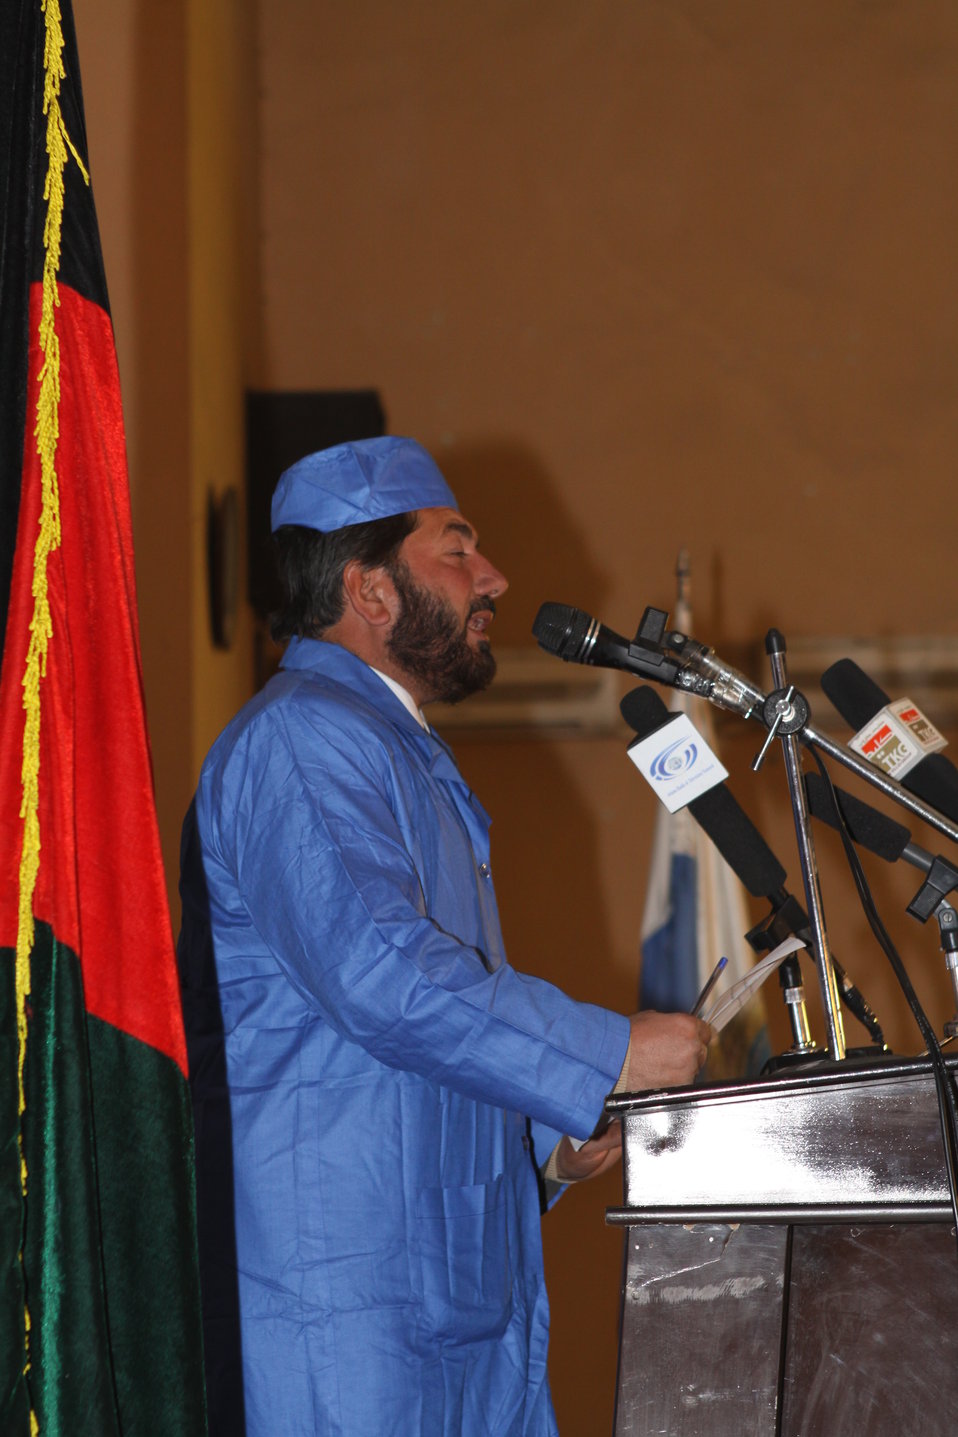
Community Health Workers Celebrated

Kabul, Afghanistan | December 5, 2010 — In support of the United Nations designated International Volunteer Day for Economic and Social Development, Afghanistan’s Ministry of Public Health celebrated its annual Community Health Worker Day today. Acting Minister of Public Health Dr. Suraya Dalil, USAID Senior Deputy Mission Director Robert Hellyer, other government officials, and international donors joined in recognizing the critical contribution of community health workers in Afghanistan and encouraging them to continue their voluntary support to their communities.
The event praised the contributions of the more than 22,000 volunteers throughout the country who deliver community level health-education, counseling, and services out of village health posts located in private homes. The Ministry of Public Health envisioned that community-based healthcare programs will actively encourage communities and families to adopt healthy lifestyles and behaviors, and provide families access to high quality and socially acceptable preventative medicine and life-saving services.
“We have 22,000 community health workers in Afghanistan that are able to implement the basic and standard medicines. They all have been trained through a job description,” said Minister Dalil. Addressing the health workers, she added, “I am proud and feel powerful that I have people like you.”
USAID-funded health projects collaborate closely with the Ministry of Public Health to improve the health and nutritional status of Afghans, provide quality primary healthcare, and promote healthy behaviors at the community and household-levels. USAID supported the training of more than 9,000 of the volunteer community health workers currently working in Afghanistan.
“On behalf of the American people, I congratulate the Community Health Workers for their diligence to gain the skills and knowledge necessary to serve their communities in this important role,” said USAID Senior Deputy Mission Director Hellyer. “USAID strongly supports community based health care and believes that quality community-based health services are essential to reaching Afghanistan’s Millennium Development Goals.”
To support the Basic Package of Health Services, USAID assisted in developing the community health worker training manual, helped train community health worker supervisors and master-trainers, facilitated in-service training, and produced and developed reporting tools, job aids, and education materials.